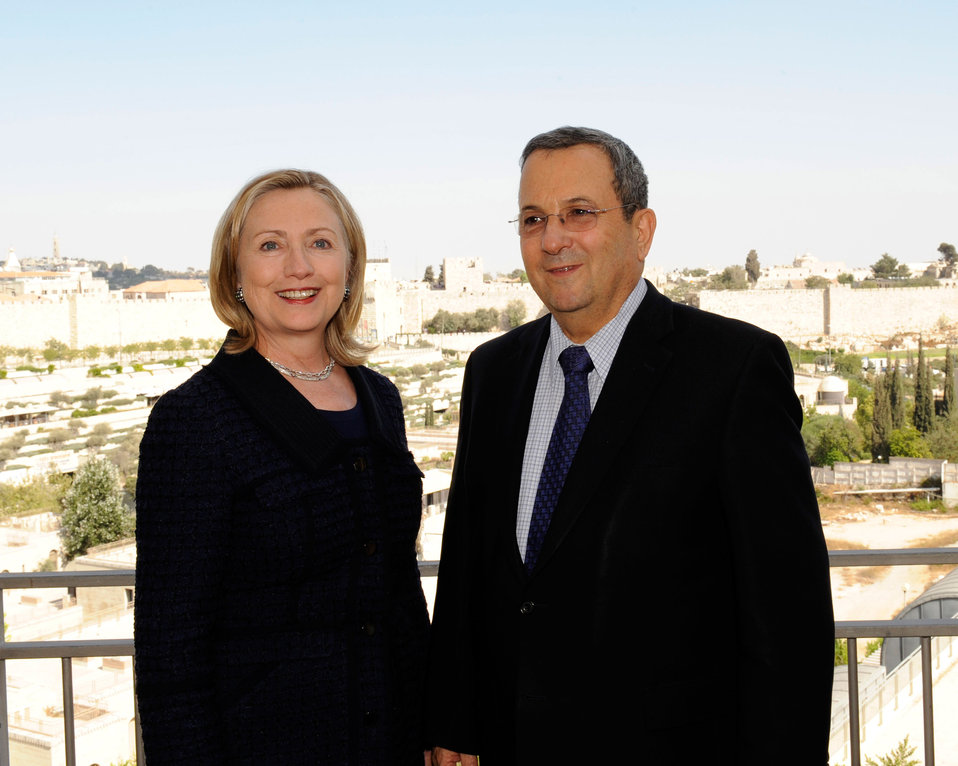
Israeli Defense Minister Barak Meets With Secretary Clinton

Israeli Defense Minister Secretary Ehud Barak meets with U.S. Secretary of State Hillary Rodham Clinton at the David Citadel Hotel in Jerusalem on September 15, 2010.